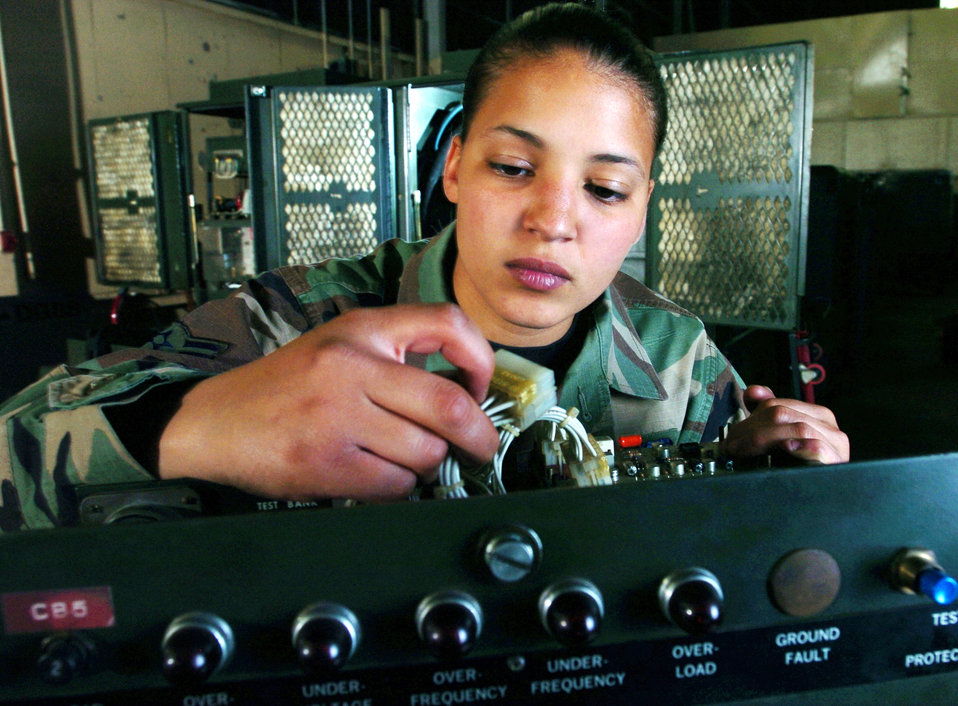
Looking for trouble

YOKOTA AIR BASE, Japan -- Airman 1st Class Almaz Tegenu inspects the protective circuit tray of a generator for defects. The mission of the 374th Maintenance Squadron Airmen is to inspect, service and repair assigned and in-transit C-130 Hercules aircraft here. They also maintain mission-ready aircraft to sustain contingency and peacetime missions throughout the Pacific theater. Airman Tegenu is an aerospace generation equipment mechanic with the squadron.